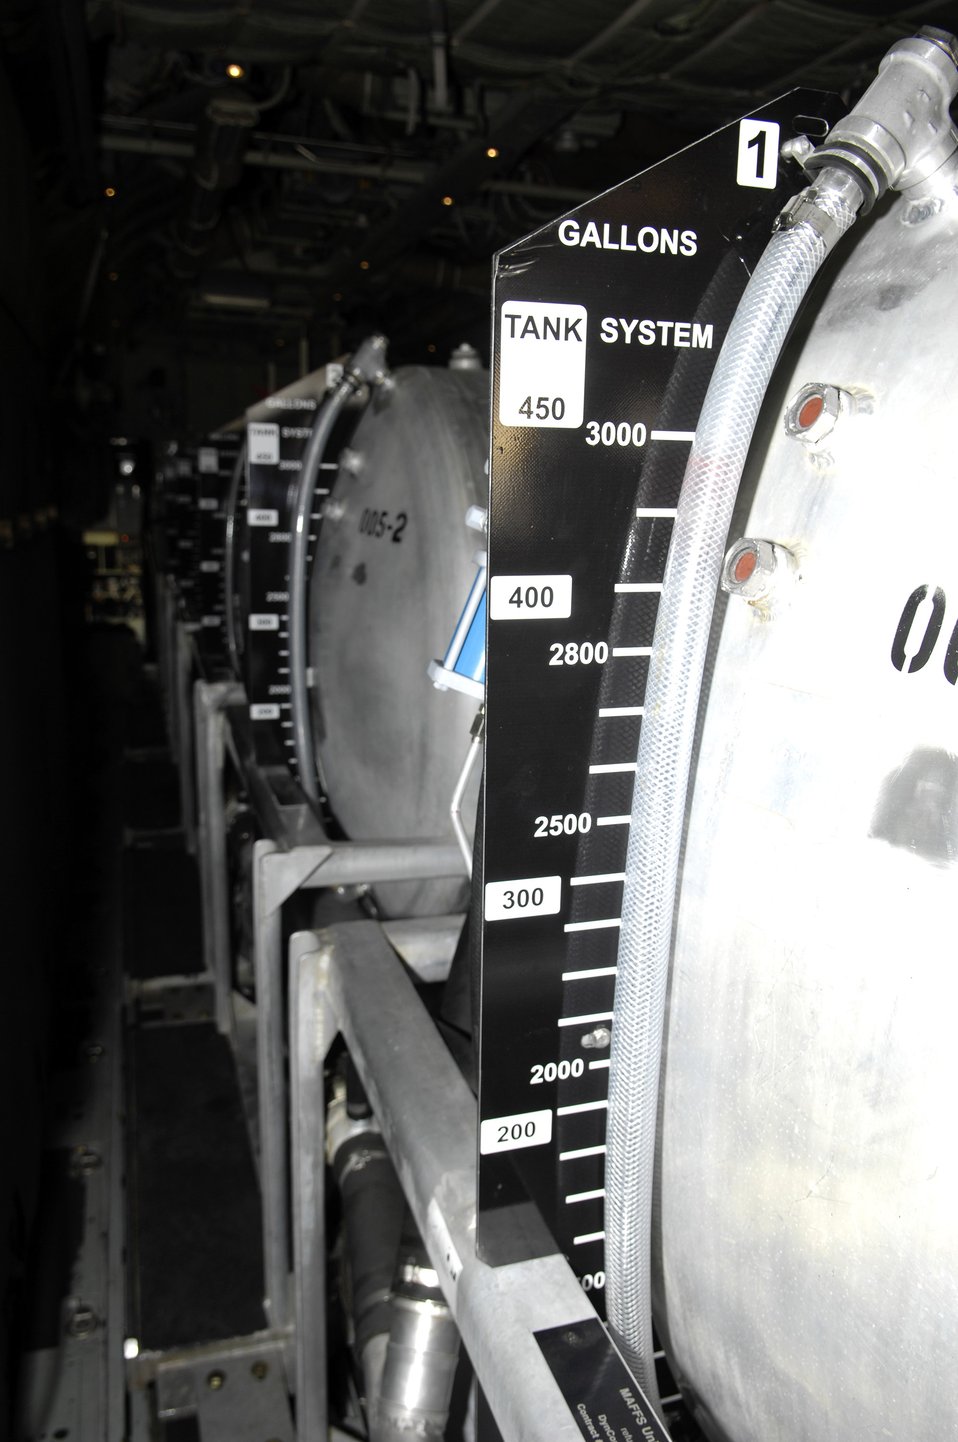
Guard, Reserve aid in California firefighting efforts

Inside a C-130 Hercules, a Modular Air Fire Fighting System is in place to help support firefighting efforts of the Southern California wildfires Oct. 25 at Channel Islands Air National Guard Base, Calif. Air Force Reserve Command and Air National Guard Airmen are participating in the Southern California firefighting effort.